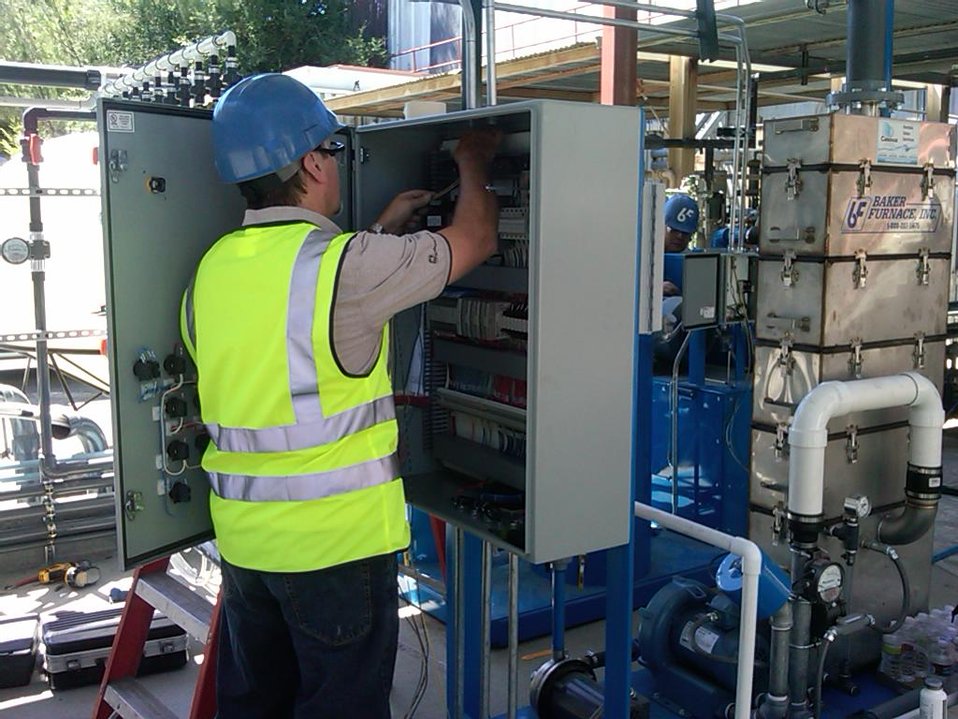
Recovery Act Supports Soil and Debris Cleanup, Groundwater Treatment at SLAC

Recovery Act workers are on track to remove more than 30,000 cubic yards of contaminated soil and debris at the SLAC National Accelerator Laboratory by September 2011.
The Recovery Act invested $14.3 million in legacy cleanup activities at SLAC. In addition to removing contaminated soil and debris that is shipped to local disposal facilities, Recovery Act workers installed three new groundwater treatment systems.